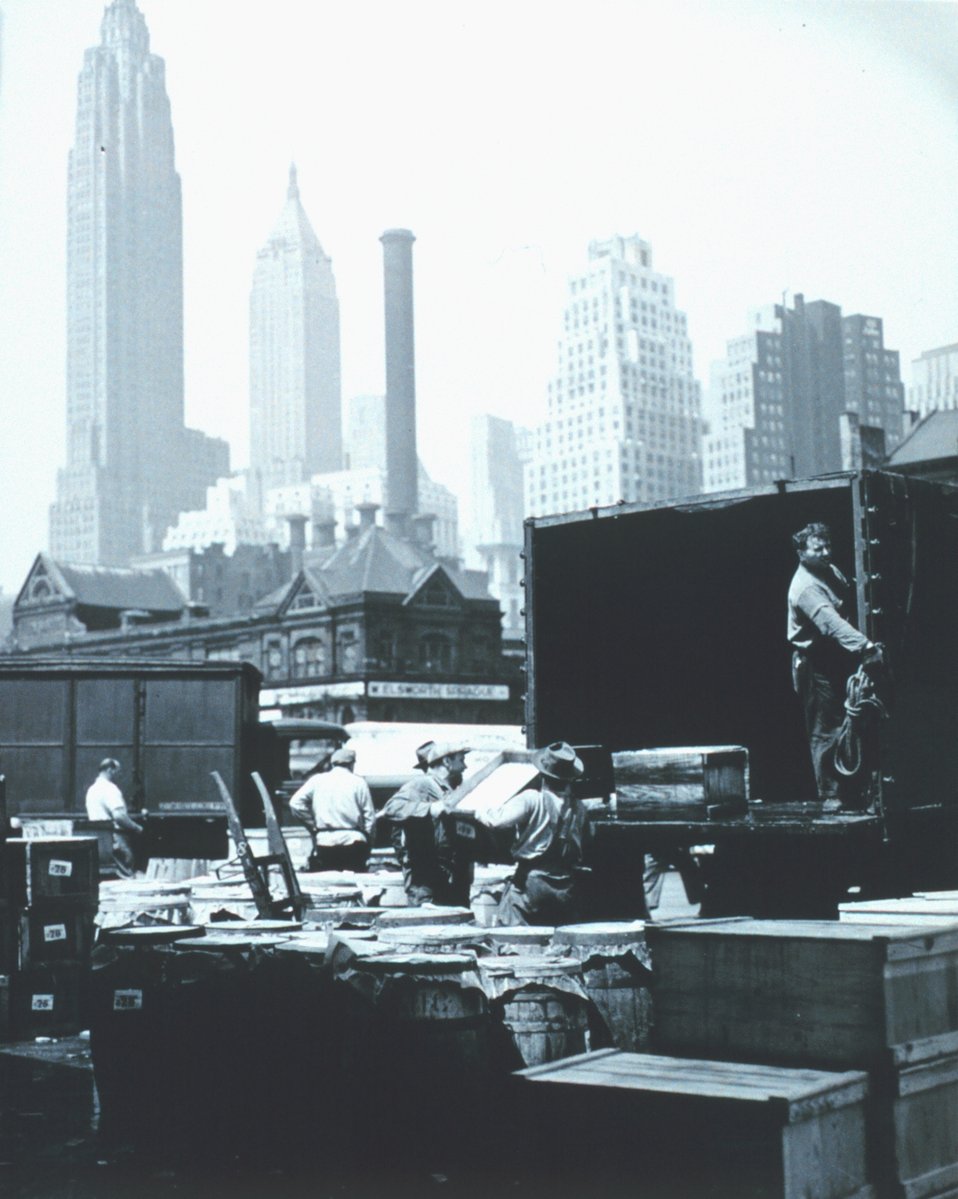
Fish market scene on the New York waterfront